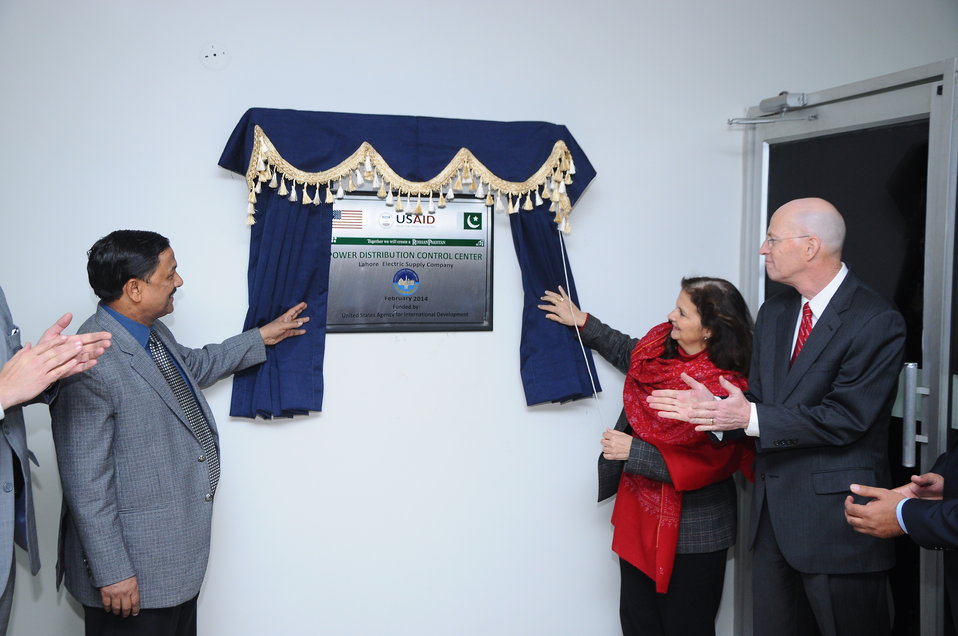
U.S. Improves LESCO’s Capacity to Reduce Load-Shedding

Marking a milestone in U.S. support to Pakistan’s energy sector, U.S. Consul General Nina Maria Fite inaugurated the Power Distribution Control Center at the Lahore Electric Supply Company (LESCO). The LESCO center was established with support from the U.S. Agency for International Development (USAID) and will enable LESCO to monitor the flow of power through their grid stations. The new meters will verify actual power flow and reduce unplanned load-shedding.